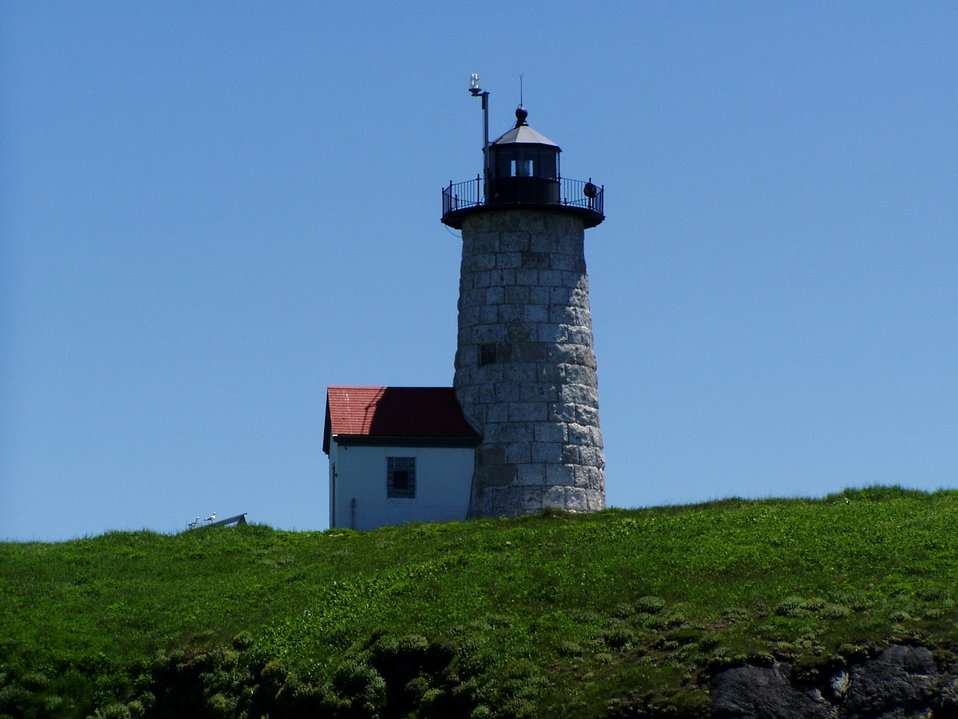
Libby Lighthouse at Maine Coastal Island National Wildlife Refuge